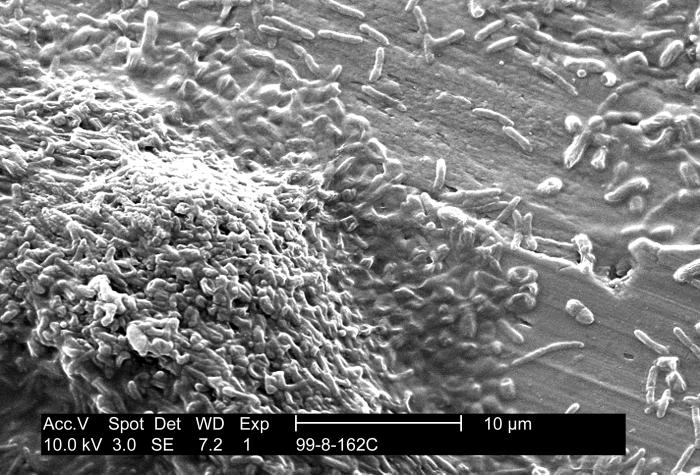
This scanning electron micrograph (SEM) depicts findings uncovered during Legionella pneumophila research, which investigated the association of amoebae when present with L. pneumophila bacteria existing on potable water biofilms.